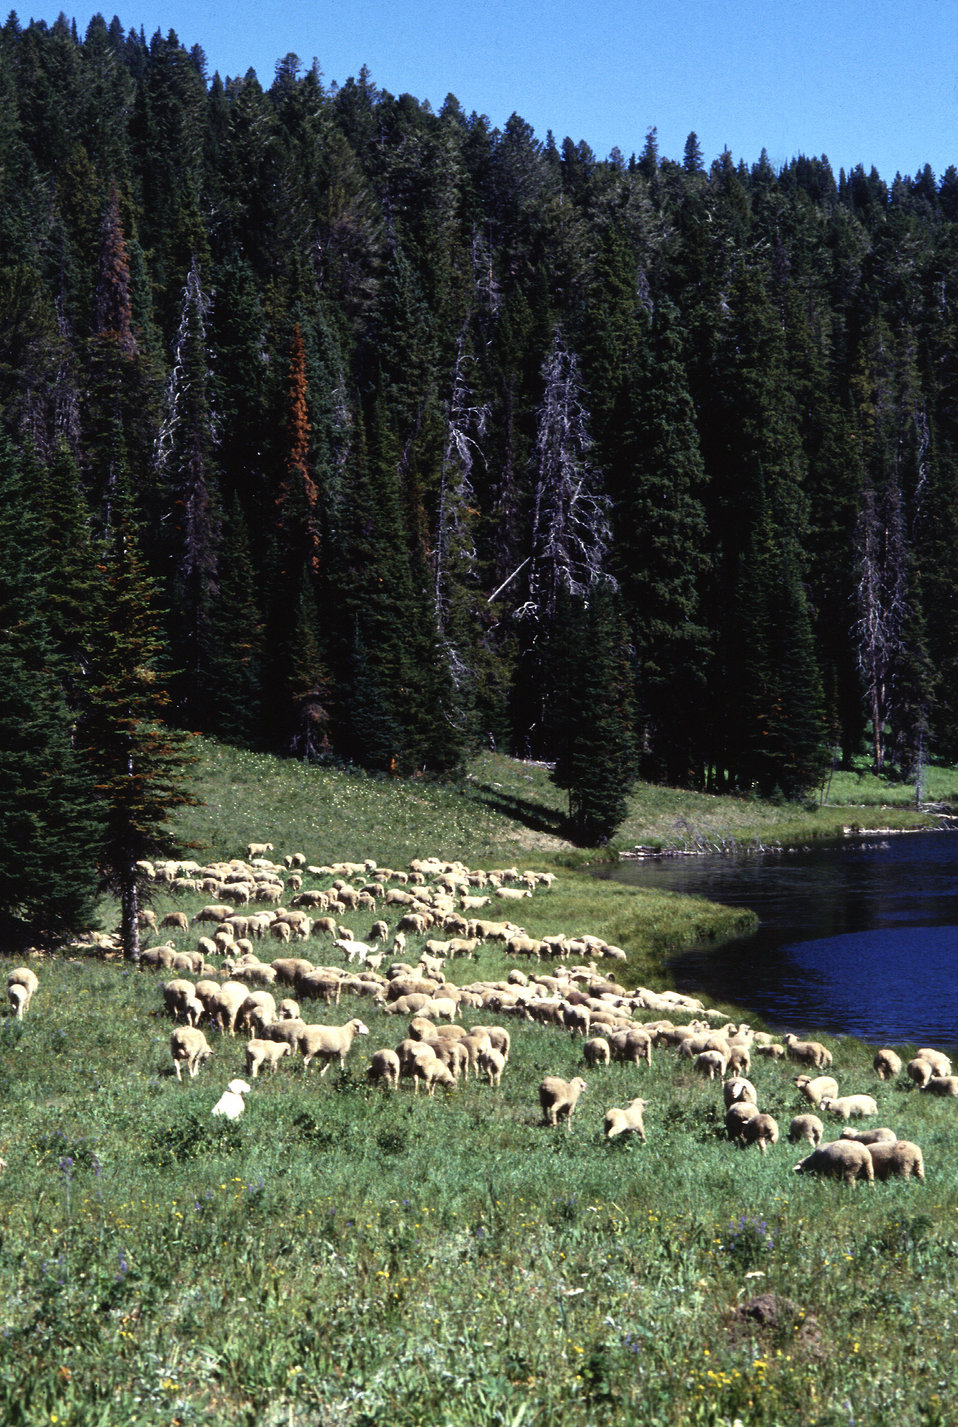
Sheep graze near Odell Lake on the U.S. Department of Agriculture’s (USDA) Agricultural Research Service (ARS) U.S. Sheep Experiment Station in the Centennial Mountains of southwestern Montana.